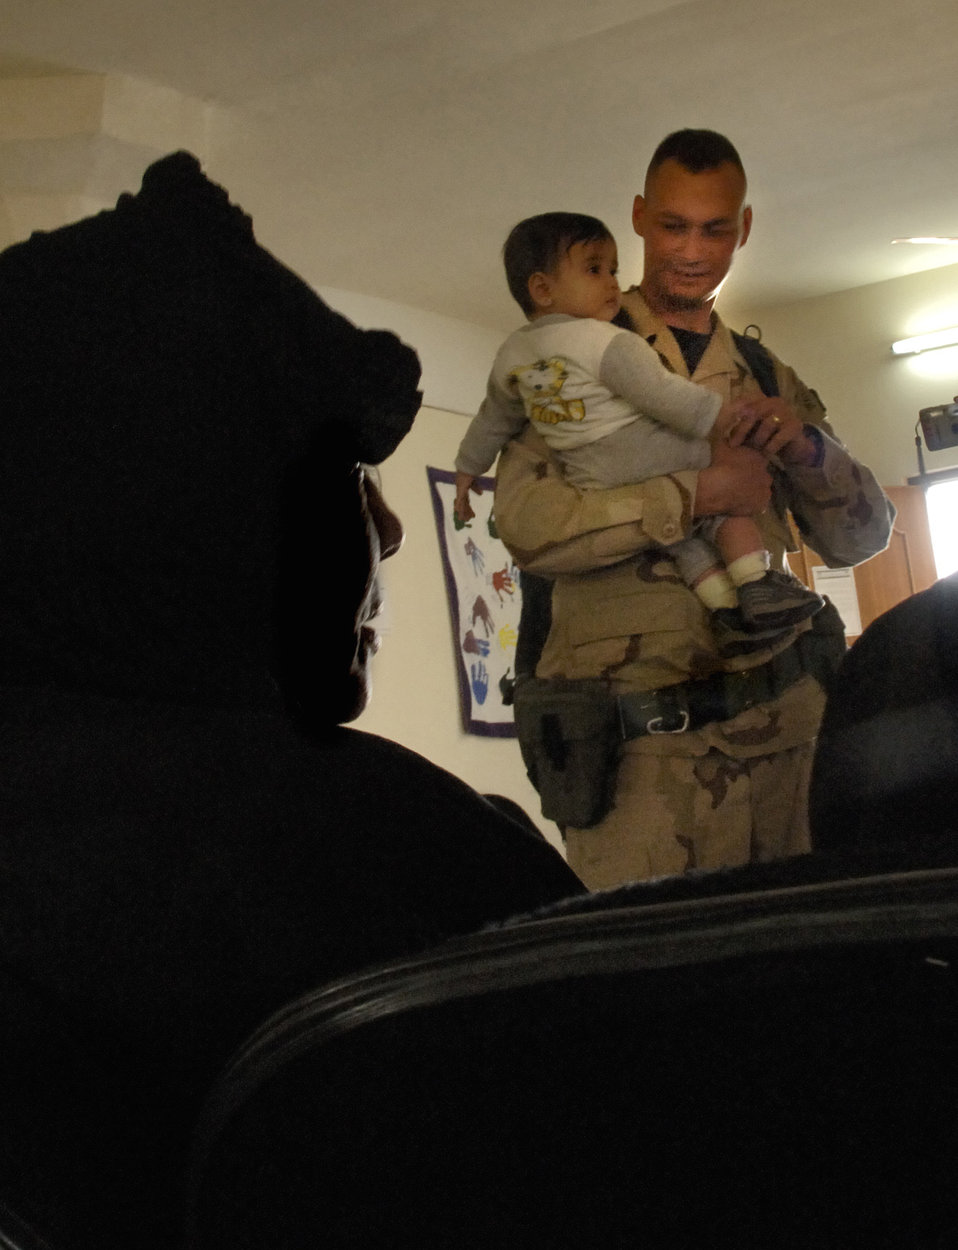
Medics, volunteers meet Iraqis' medical needs

Staff Sgt. Brian Newton helps Iraqi mothers keep their children entertained while waiting to see a medic at the Radhwaniya Medical Clinic Outreach Program. Sergeant Newton is assigned to the 447th Expeditionary Security Forces Squadron, Sather Air Base, Iraq. Several times a week volunteers meet at the facility on the edge of the Baghdad International Airport area and support the medical needs of civilians.